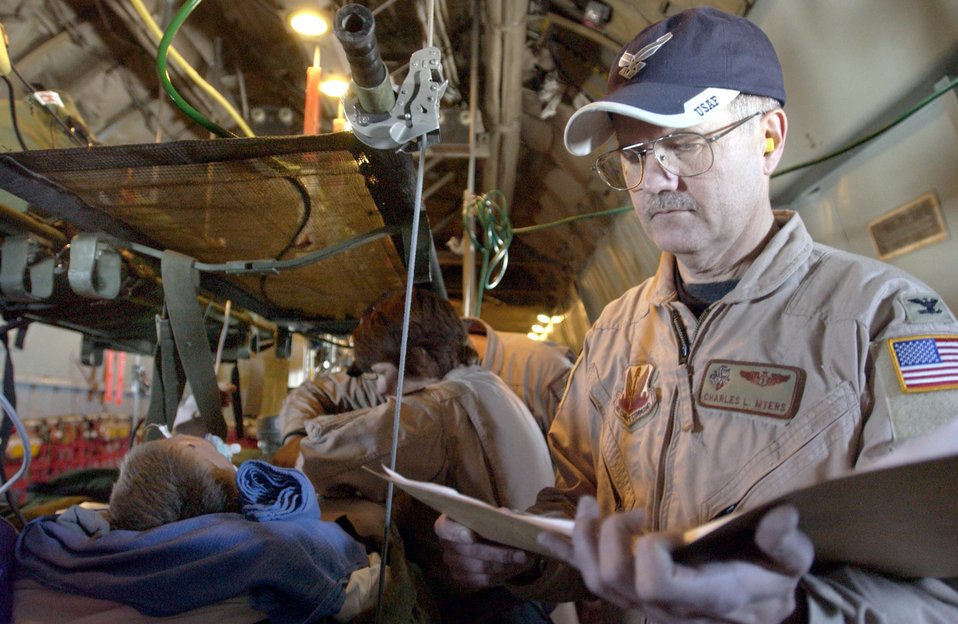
The best of care

ABOARD A C-141 STARLIFTER -- Col. (Dr.) Charles Meyer checks the medical charts of a wounded servicemember being transported from Iraq to Landstuhl Regional Medical Center in Germany. Dr. Meyer heads a Critical Care Aeromedical Transport Team, which also includes a nurse and a respiratory technician. They are Guard and Reserve members assigned to the 791st Expeditionary Aeromedical Squadron, based at Ramstein Air Base, Germany. The critical-care teams have special training in managing patients in less-than-ideal patient-care environments.